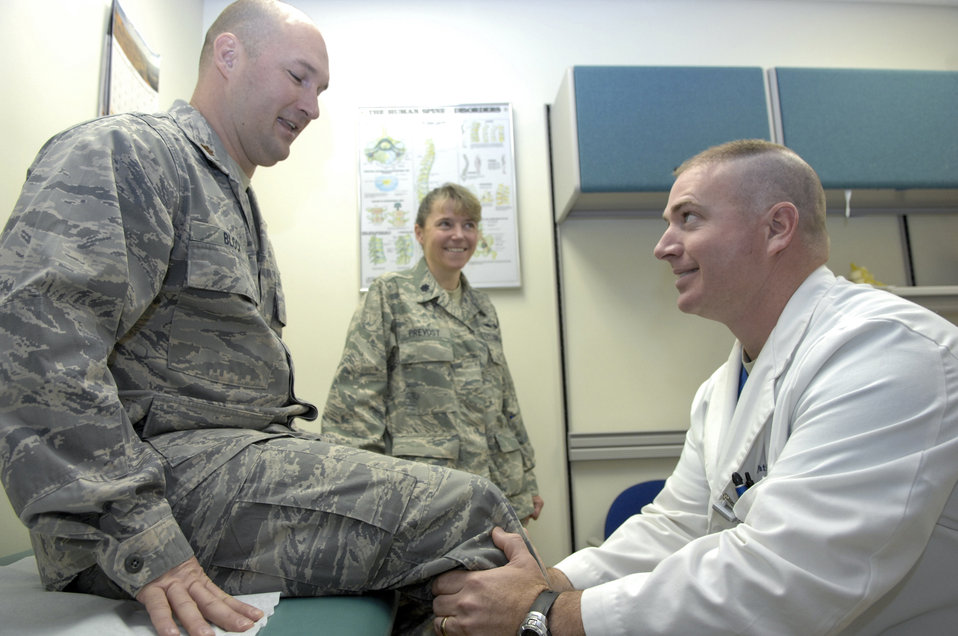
Medical exchange program benefits military, civilian community

Army Reserve 1st Lt. (Dr.) Patrick Ballard examines Maj. (Dr.) Douglas Block while Lt. Col. (Dr.) Michelle Prevost oversees the procedure Sept. 10, 2009, at Elmendorf Air Force Base, Alaska. Doctor Ballard is a family practice resident from Providence Alaska Medical Center in Anchorage.